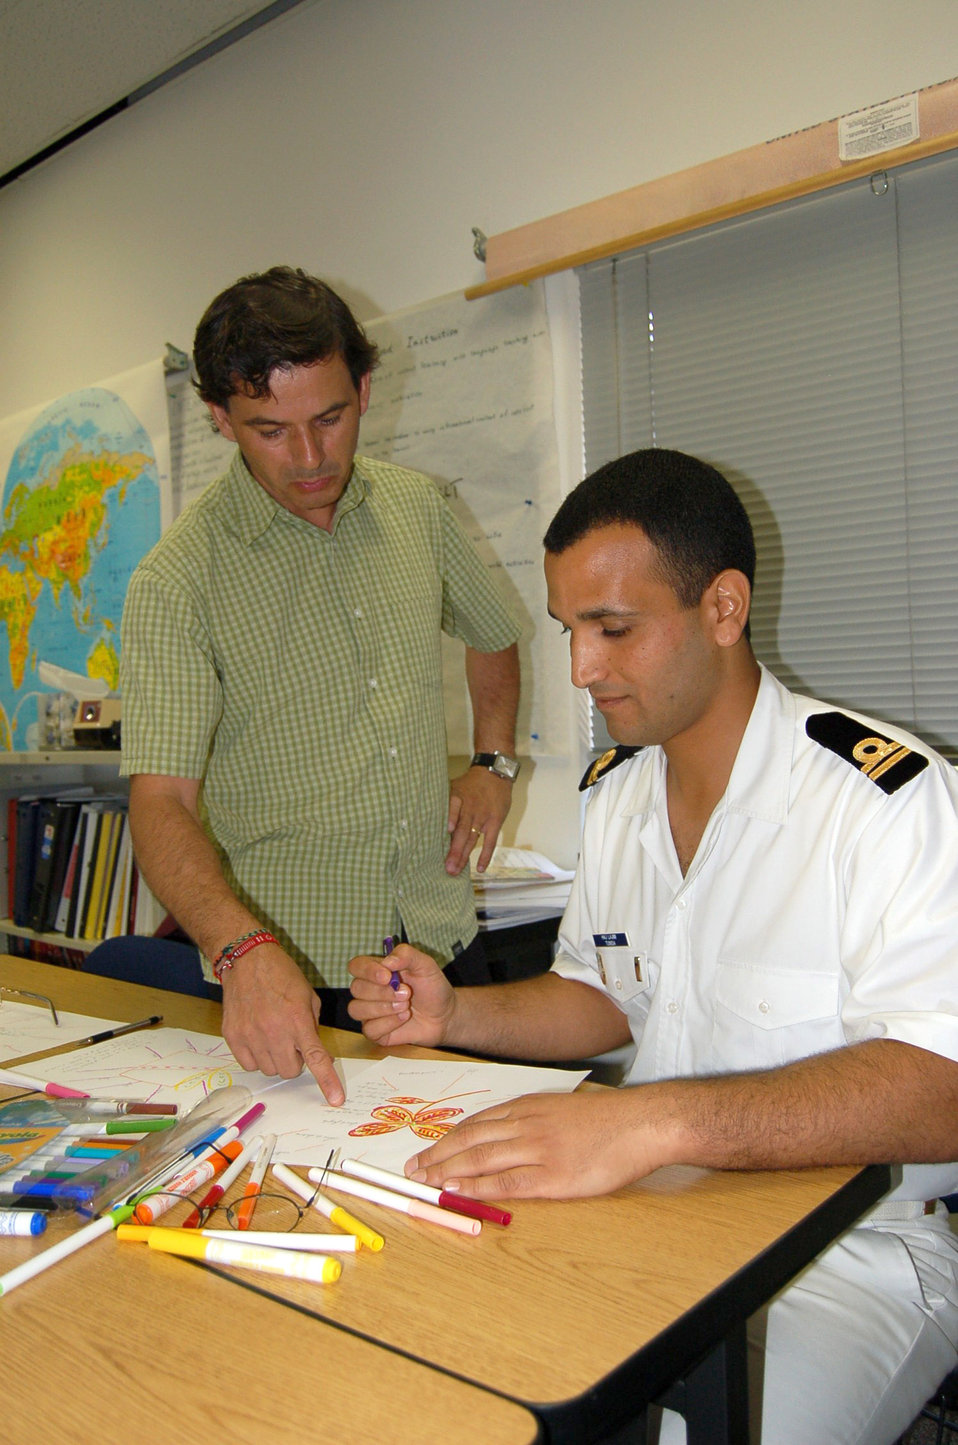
DLI fosters international goodwill

Instructor Antonio Martins discusses a mind mapping exercise with Tunisian Navy Lt. Majed Haj Lajimi at the Defense Language Institute English language course at Lackland Air Force Base, Texas, on July 18. Mind mapping is one of the tactics used to make learning English an easier experience.